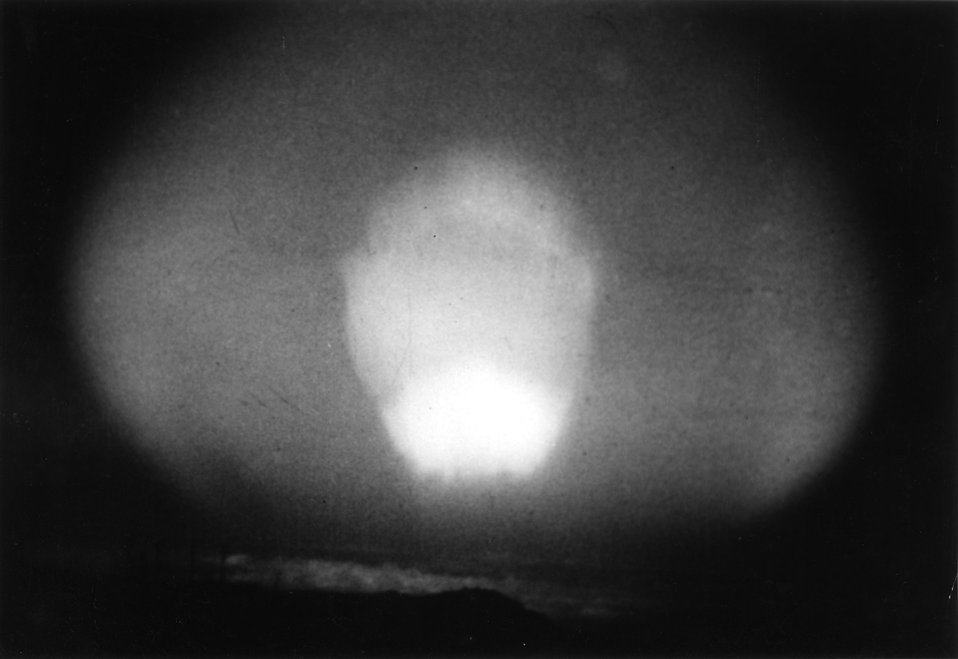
Fireball and red luminous spherical wave formed after the TEAK high-altitude shot, taken 780 miles from the explosion.